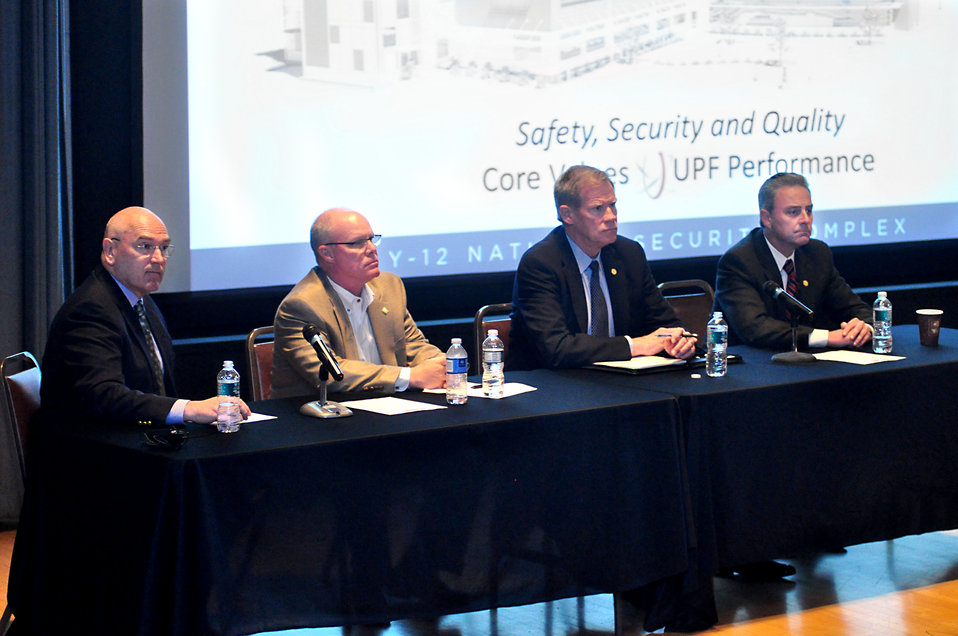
Oak Ridge Business Saftey Partnership Meeting UPF 2014 Oak Ridge

14-042-DOE photo Lynn Freeny
L to R Jeff Miller ORAU Senior Scientist, Gary Hagan Manager for ES&H, Carl Strock Project Director, and John Eschenberg Federal Project Director Oak Ridge Tennessee